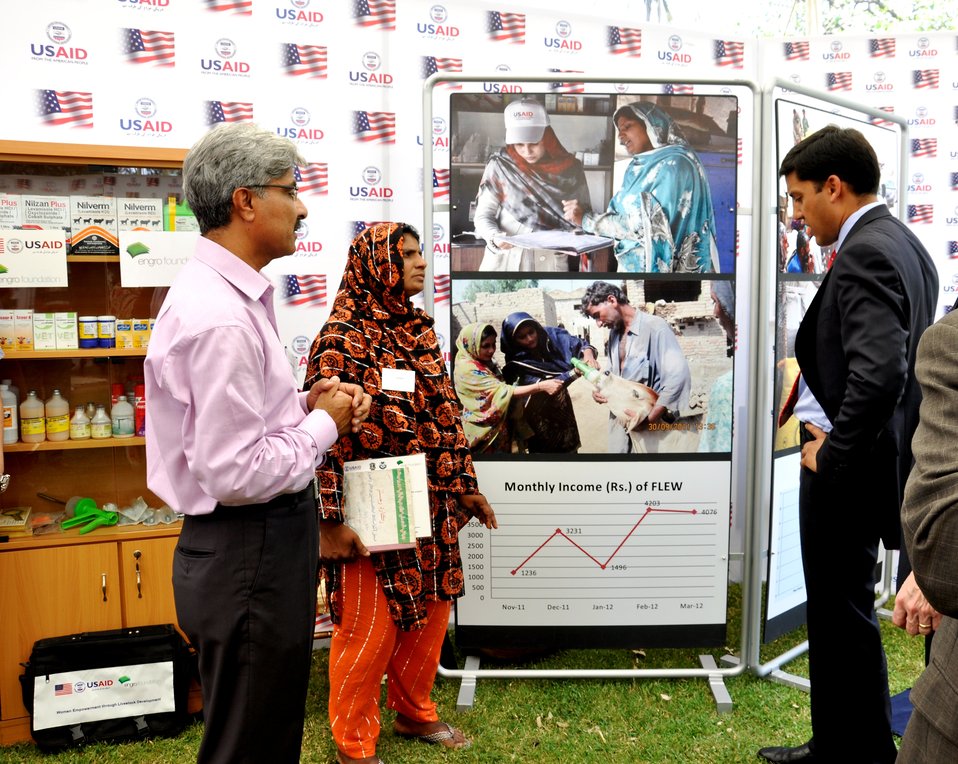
Dairy project benificiary sharing her experiances with Dr. Shah